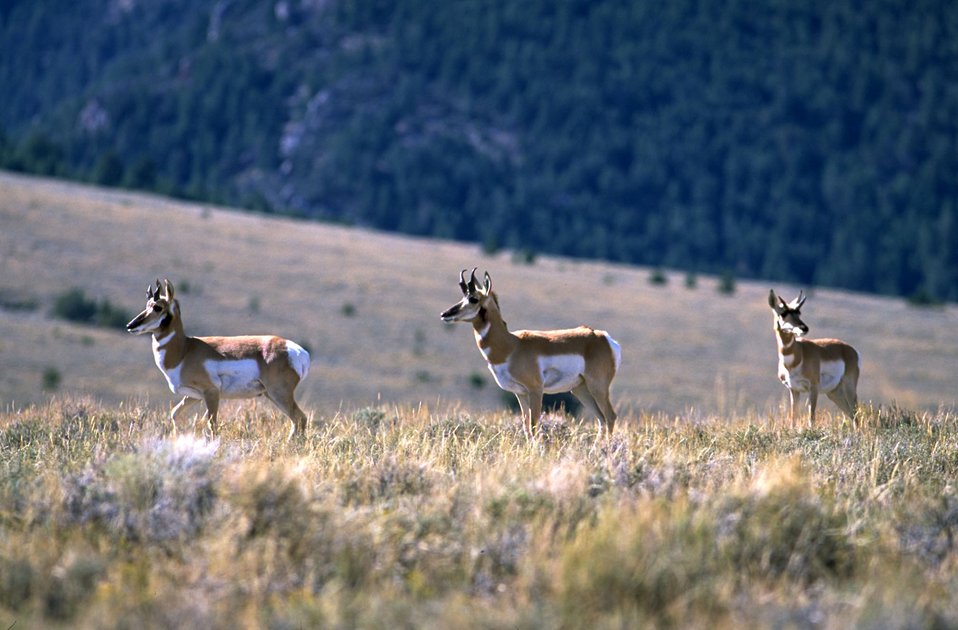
Antelope on sage grass hillside with forest in background